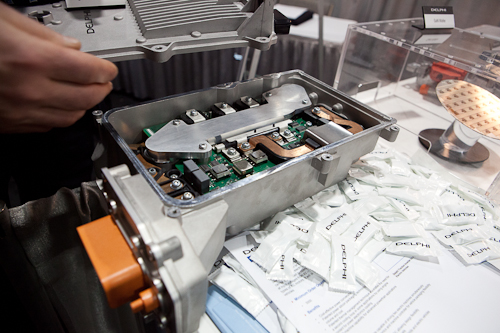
Delphi Automotive

Indiana-based Delphi Automotive is developing power converters that are smaller and more energy efficient, reliable, and cost-effective than current power converters.
If successful, Delphi would improve the efficiency of power conversion by 50% or more -- making a variety of eletric vehicles more viable alternatives to conventional gas-powered vehicles.